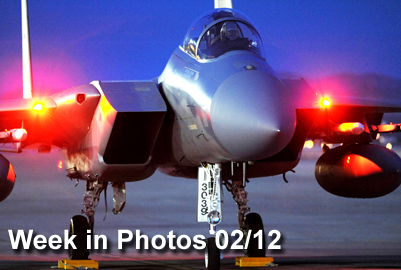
Air Force Week in Photos for Feb. 12, 2010, highlights photos from around the Air Force. In this photo by Tech. Sgt. Michael R. Holzworth, an F-15 Eagle pilot waits for the chocks to be pulled as he prepares for a night training mission Feb. 2, 2010, during Red Flag at Nellis Air Force Base, Nev.